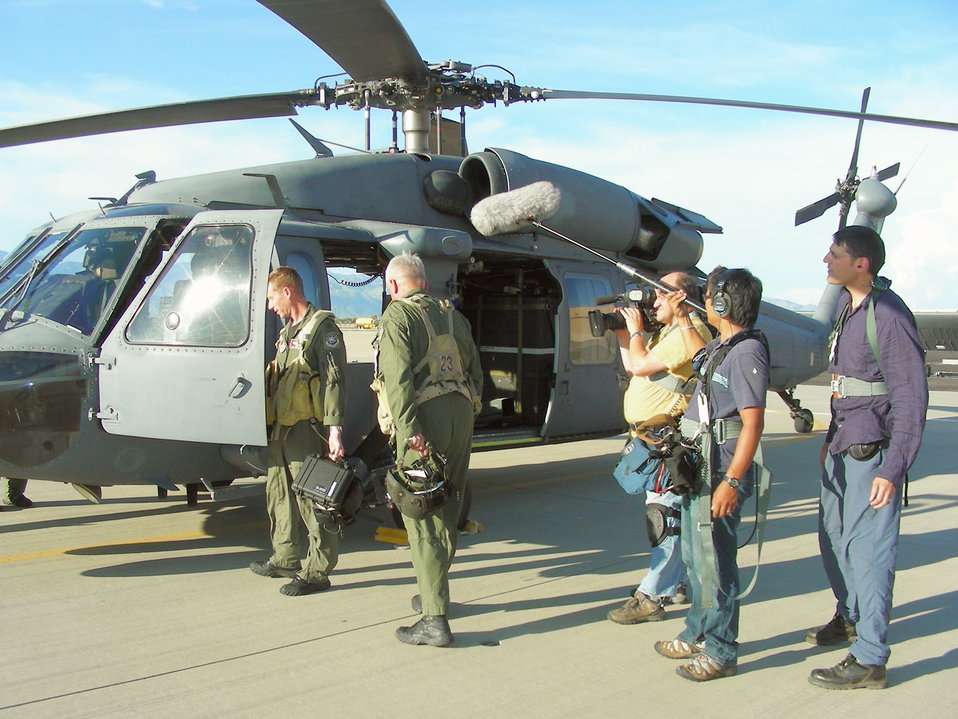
Reserve Airmen from the 920th Rescue Wing at Patrick Patrick Air Force Base, Fla. and from their geographically separated unit, the 943th Rescue Group, are featured for their heroics in a newly released documentary titled,